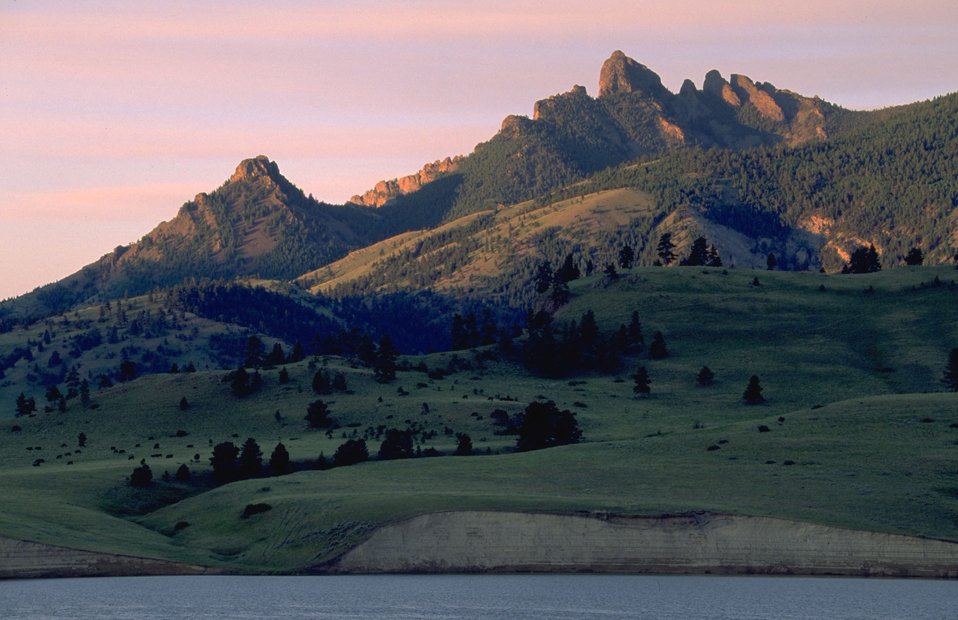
Holter Lake view of Sleeping Giant Wilderness Study Area